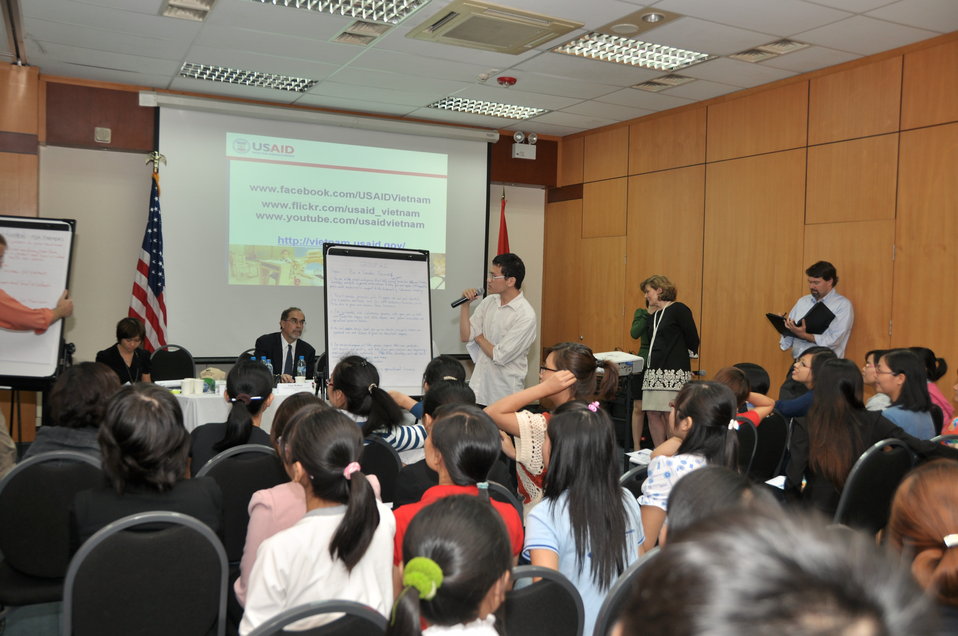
Vietnamese university students join the Business Plan Mashup exercise

Photo: @USAIDVietnam, November 16, 2012